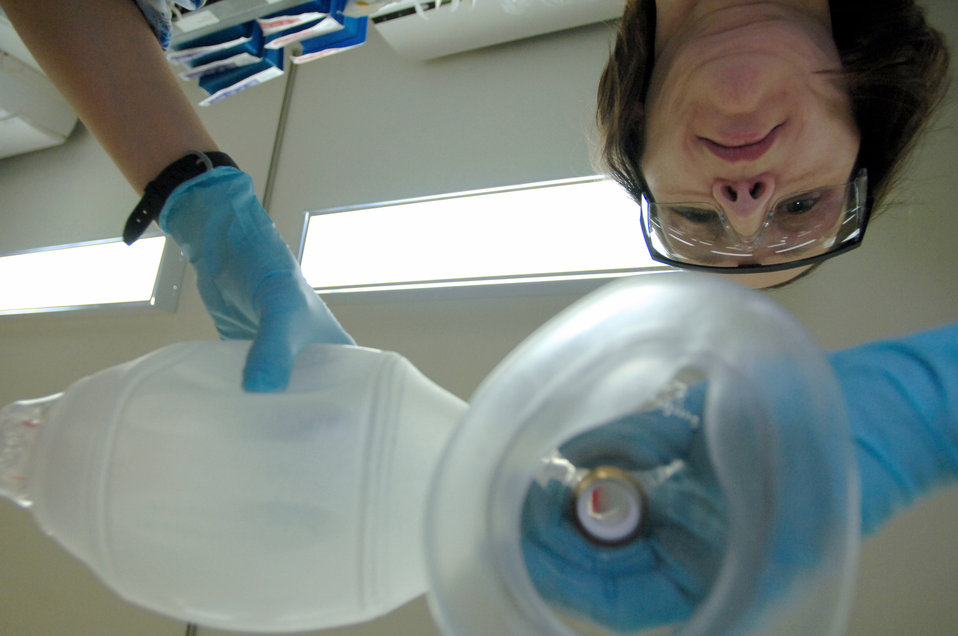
Patient perspective

Tech. Sgt. Patricia Riordan aids a